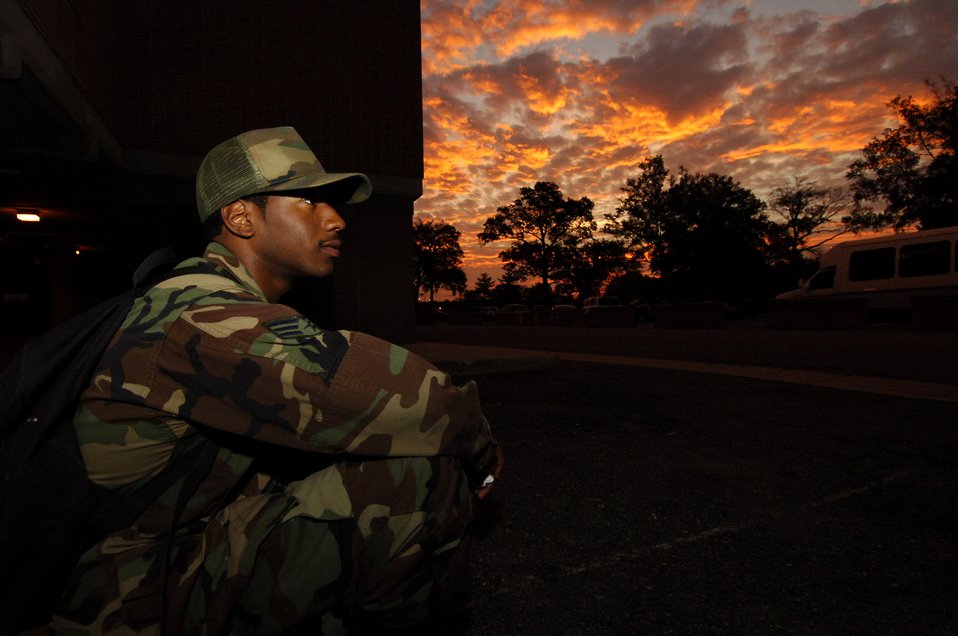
Waiting on a call

Senior Airman Jacob Carter takes part in a mass casualty exercise Oct. 22 at Andrews Air Force Base, Md. The exercise evaluates joint operations, procedures and command and control among Department of Defense and interagency partners for natural or man-made disasters inside the nation’s capital.